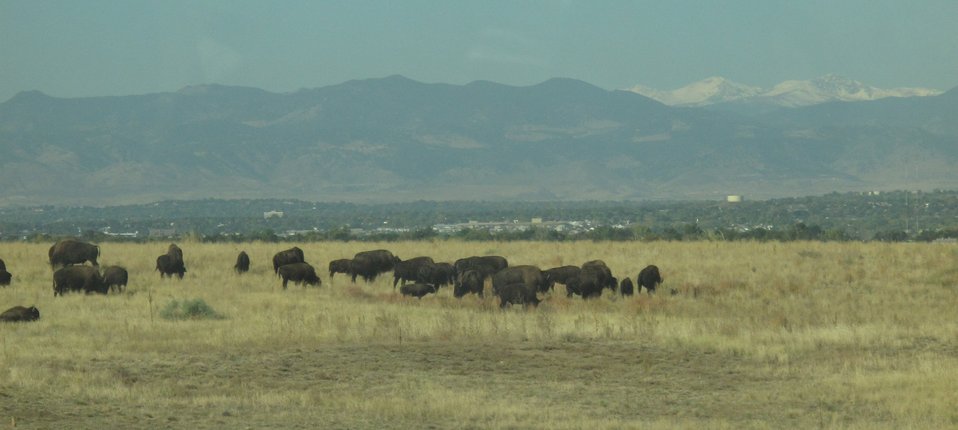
Bison Tour

Bison herd seen on a bison tour at the Rocky Mountain Arsenal.